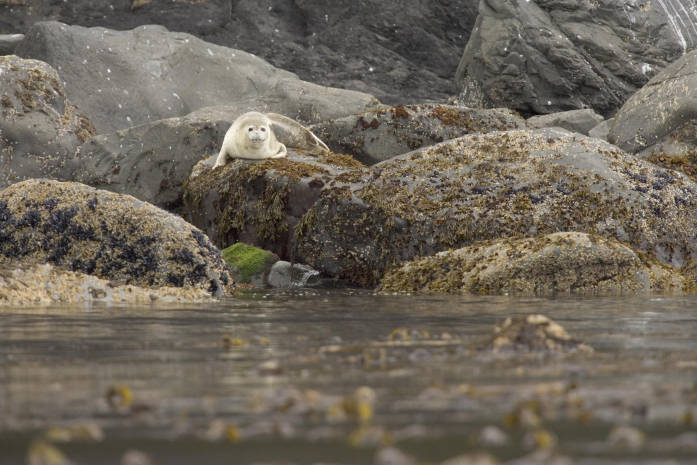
seal pup

Alaska Maritime National Wildlife Refuge